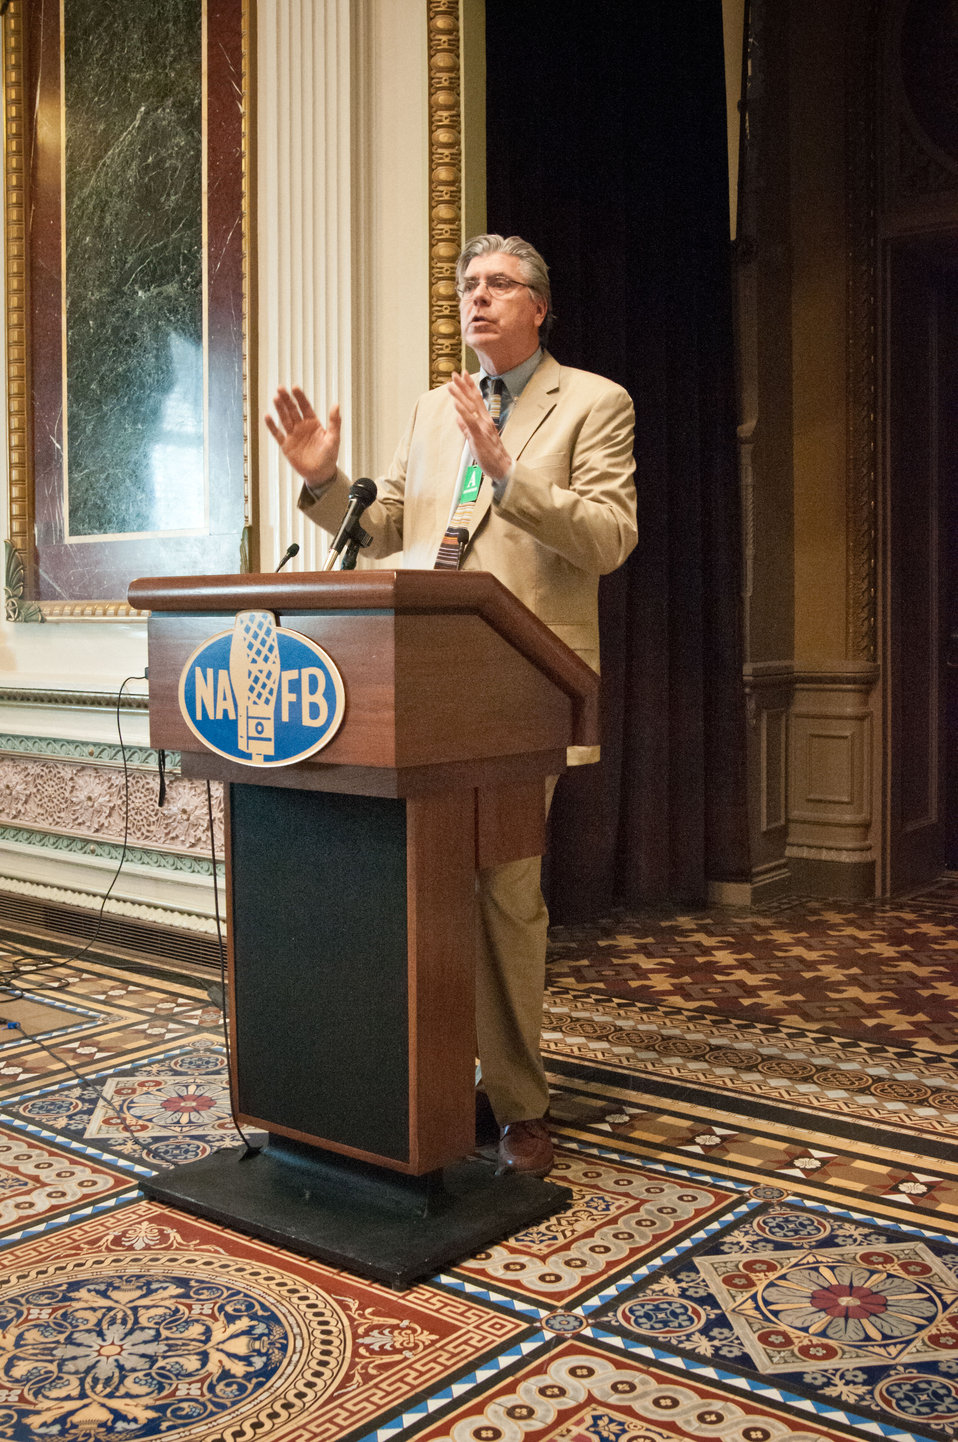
United States Department of Agriculture, Chief Economist Dr. Joseph Glauber discussed the agricultural economic outlook at the Spring National Association of Farm Broadcasters (NAFB), “Washington Watch” member retreat in Washington, D.C. This year the meeting was held in the Eisenhower Executive Office Building, Indian Treaty Room on Tuesday, April 24, 2012, featuring United Sates Department of Agriculture and Obama Administration officials. This opportunity provides an occasion to highlight efforts to rebuild and revitalize rural America, including efforts for the agricultural community. NAFB is the recognized and trusted source of agricultural and rural lifestyle information for America with approximately 200 members who broadcast via radio in nearly every state in the country.